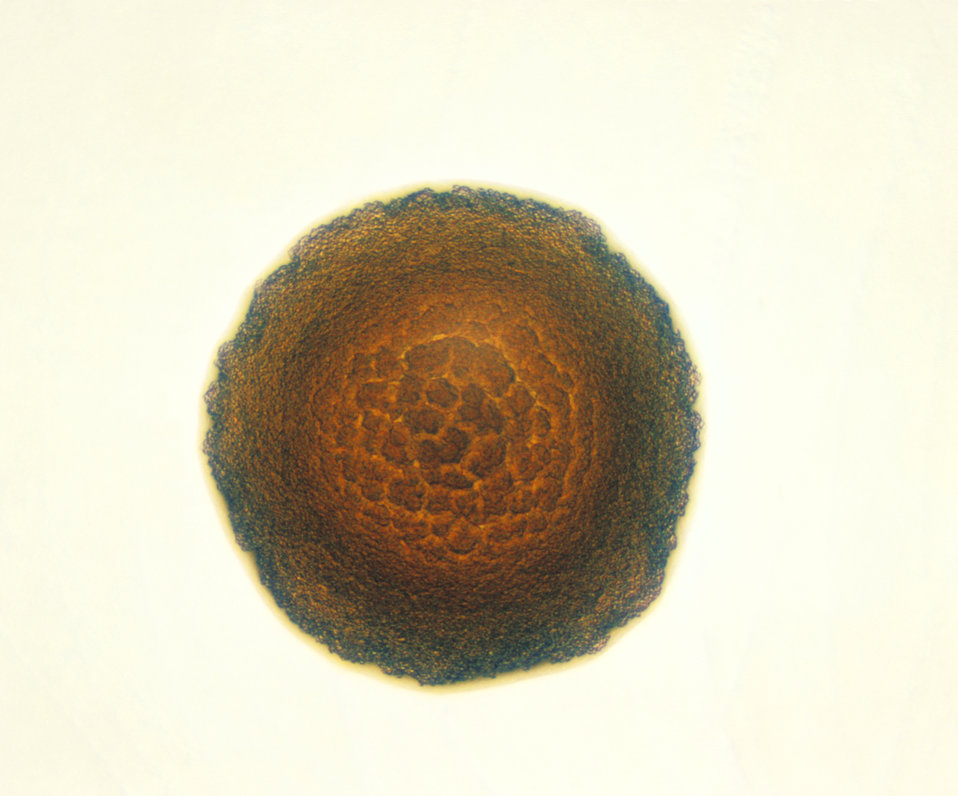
Photomicrograph of Neisseria gonorrhoeae colonies growing on GC base media with IsoVitaleX after 24 hours.